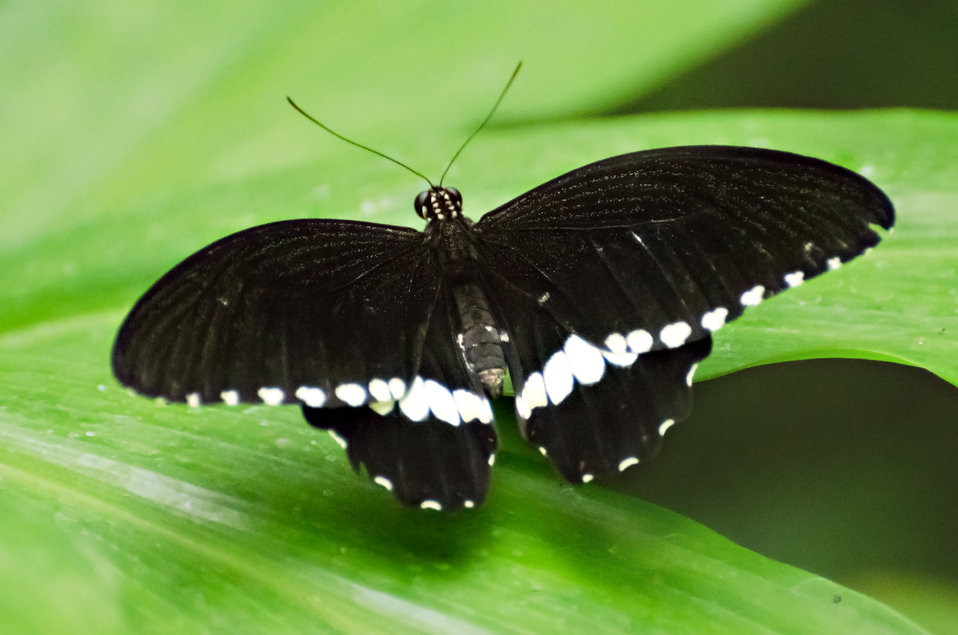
Butterfly

Big tropical butterfly.